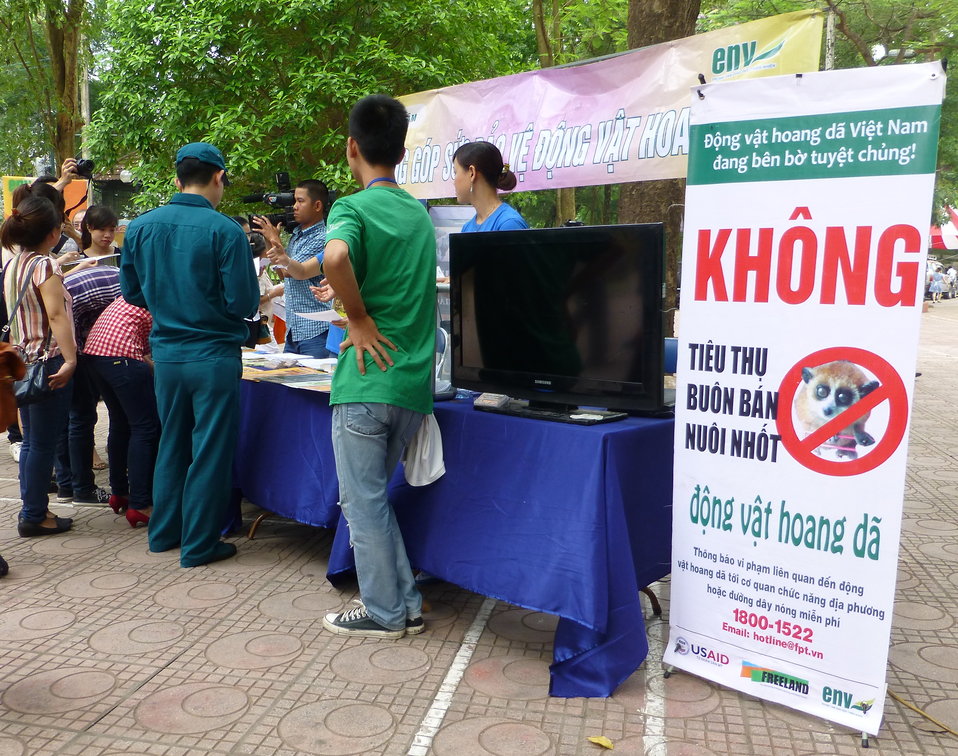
USAID Supports International Day for Biological Diversity in Hanoi